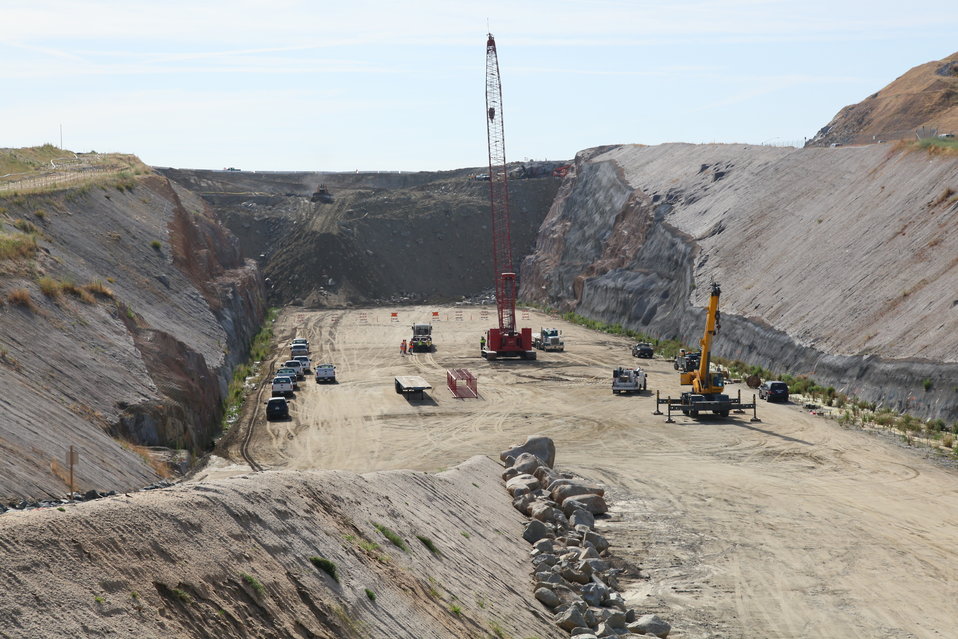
Excavating Folsom Dam’s auxiliary spillway

Excavation of the auxiliary spillway at Folsom Dam in Folsom, Calif., continues June 16, 2011. The spillway will let Folsom Dam release water sooner and more safely. The project is part of the Folsom Dam Joint Federal Project, a joint effort of the U.S. Army Corps of Engineers Sacramento District, the U.S. Bureau of Reclamation, the Central Valley Flood Protection Board and the Sacramento Area Flood Control Agency to improve the safety of the dam and reduce flood risk for the greater Sacramento area.